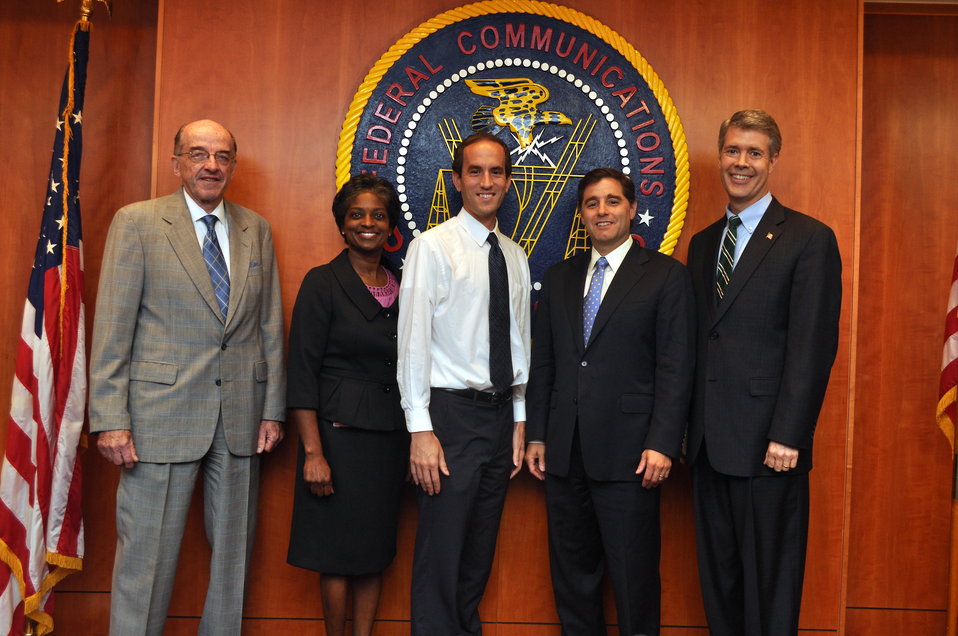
Engineers and Economists

At the August, 2011 Open Meeting the FCC recognized engineers and economists.